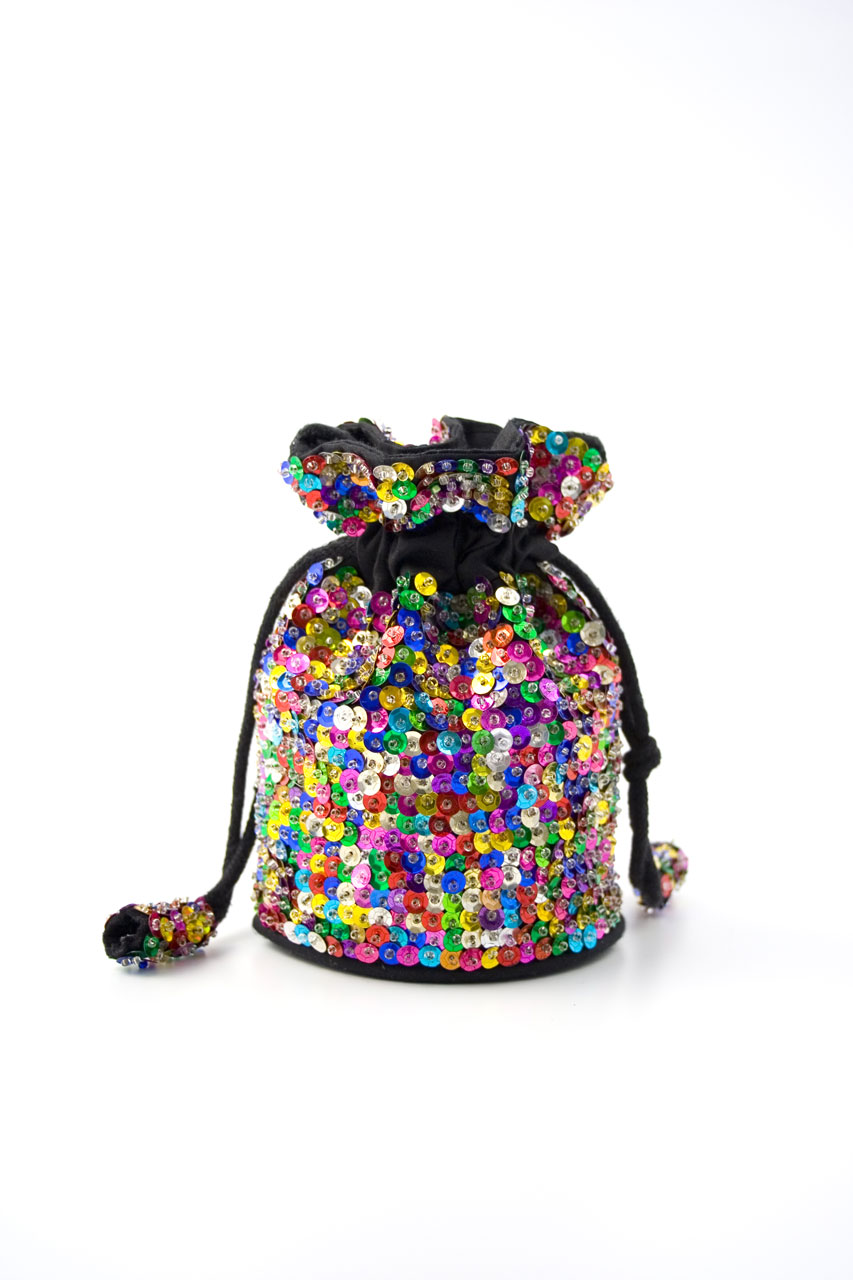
Colorised bag for marbles

Nice colorised bag for marbles with flickers.